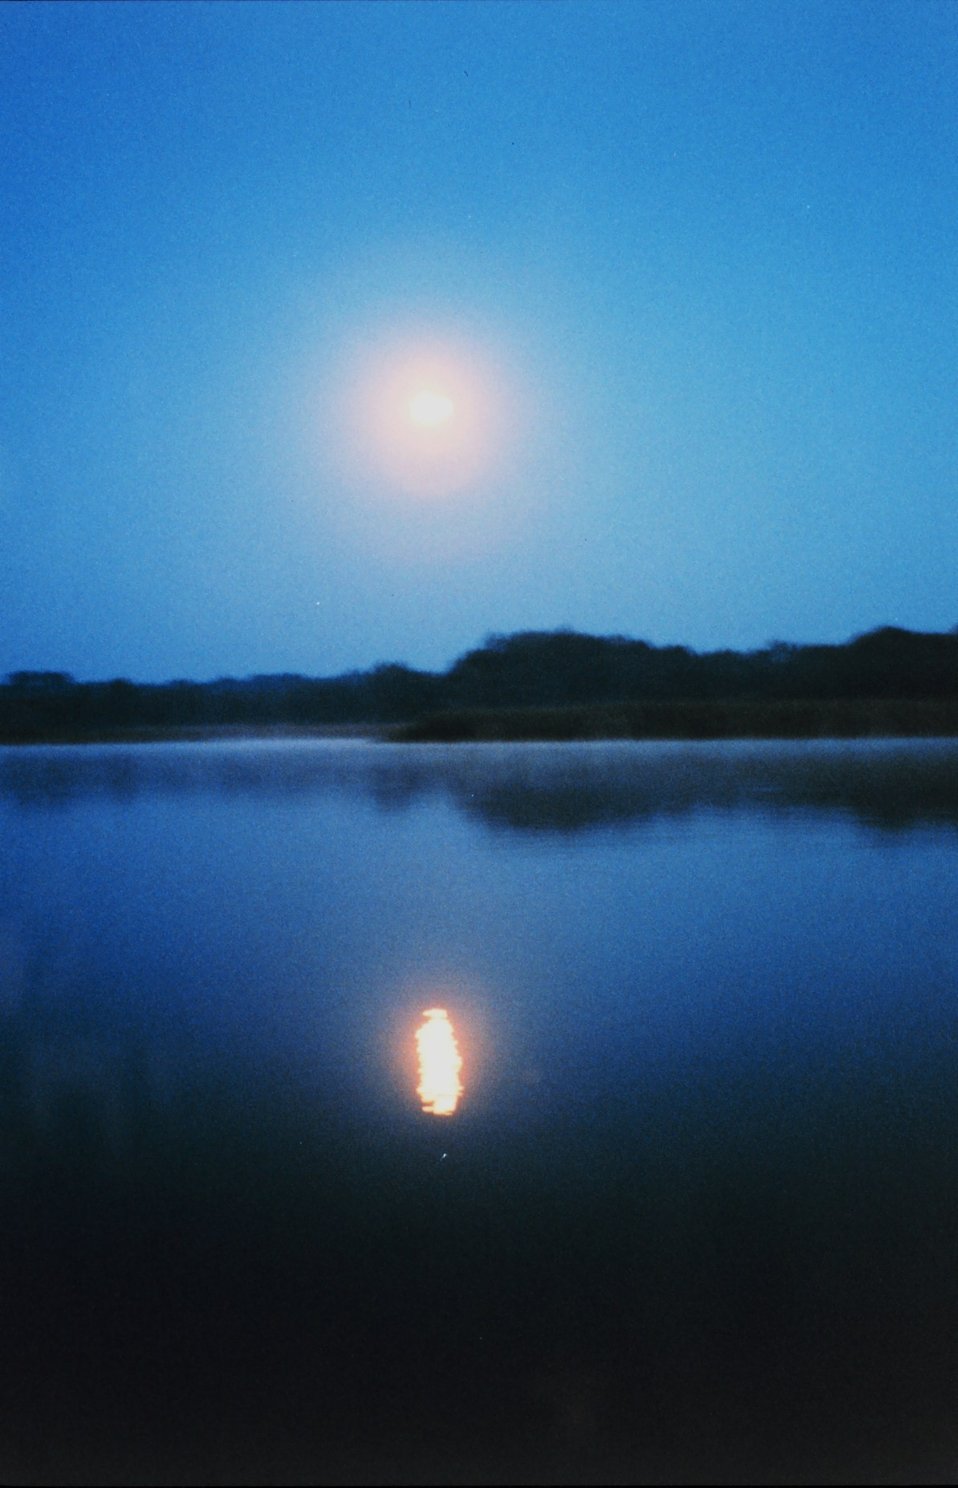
A full moon reflecting off the river - almost at dawn